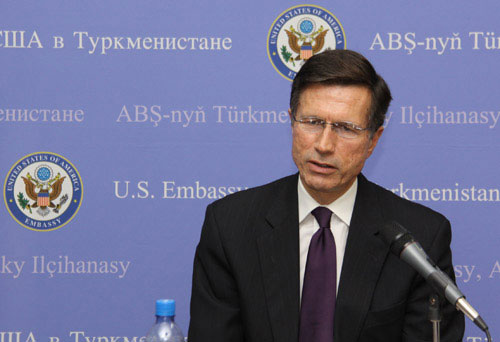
Assistant Secretary Blake Holds a Press Conference

Assistant Secretary of State for South and Central Asian Affairs Robert O. Blake holds a press conference following the U.S.-Turkmenistan Business Council at the U.S. Embassy Ashgabat, Turkmenistan, on February 16, 2011.